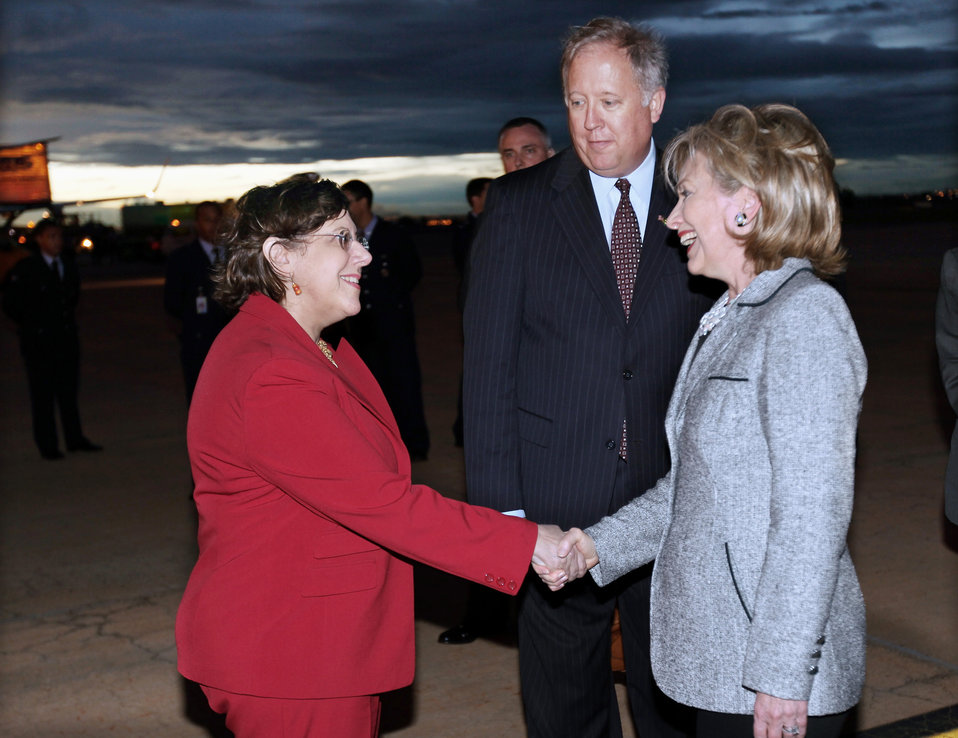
Secretary Clinton Greets Deputy Chief Lisa Kubiske

U.S. Secretary of State Hillary Rodham Clinton greets the Deputy Chief of U.S. Embassy Lisa Kubiske during her visit in Brasilia, Brazil March 2, 2010.